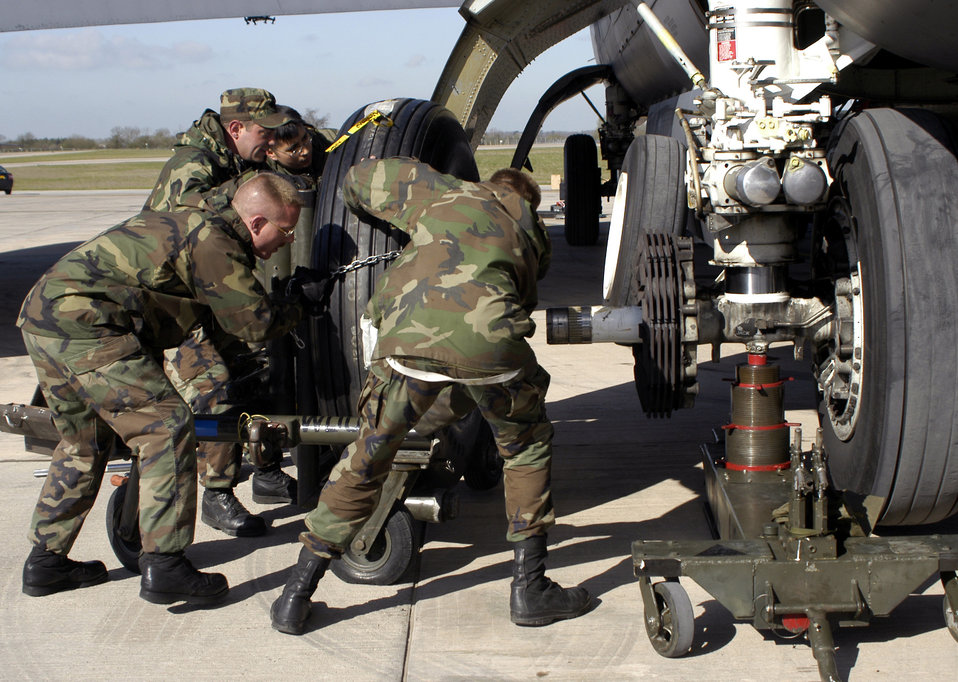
Tire change

OPERATION IRAQI FREEDOM -- Staff Sgt. Randy Simmons and Senior Airmen Benjamin David, Steven Campos and Matthew Easton push a fresh B-52 Stratofortress tire toward its mount April 7 at a forward-deployed location. Two or three of the 500-pound tires get changed each day. The old tire is removed and then bled of its air. The new four-foot tall tire is then mounted in place. The whole process takes about 20 minutes for each tire.